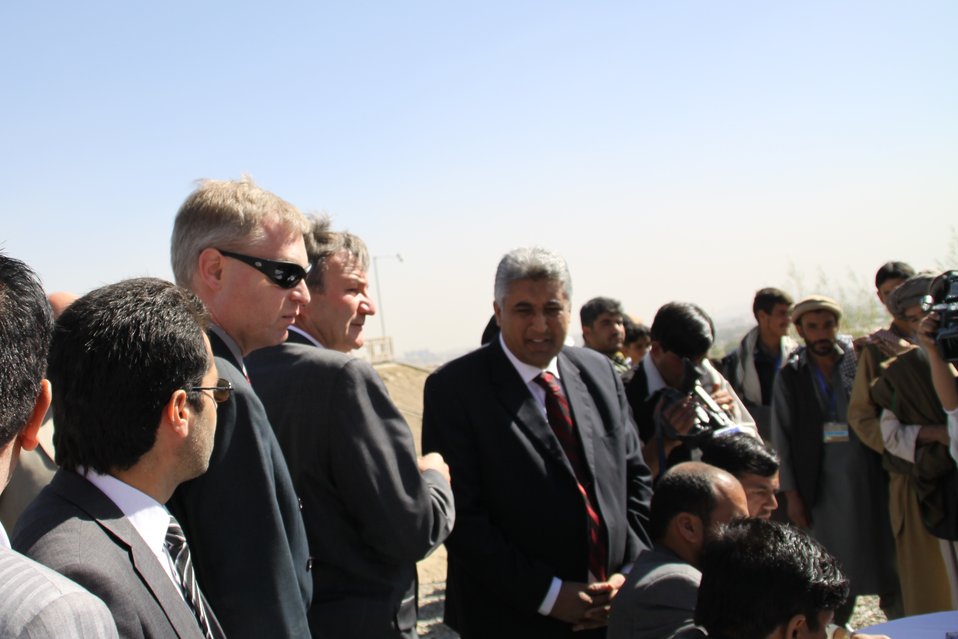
AVIPA Plus Wheat Seed Distribution 101005

US Ambassador Karl Eikenberry and USAID Acting Mission Director Kevin Brownawell joined the Minister of Agriculture, Irrigation and Livestock, H.E. Minister Mohammed Rahimi in signing a Memorandum of Understanding and distributing vouchers to area farmers for wheat and fertilizer.